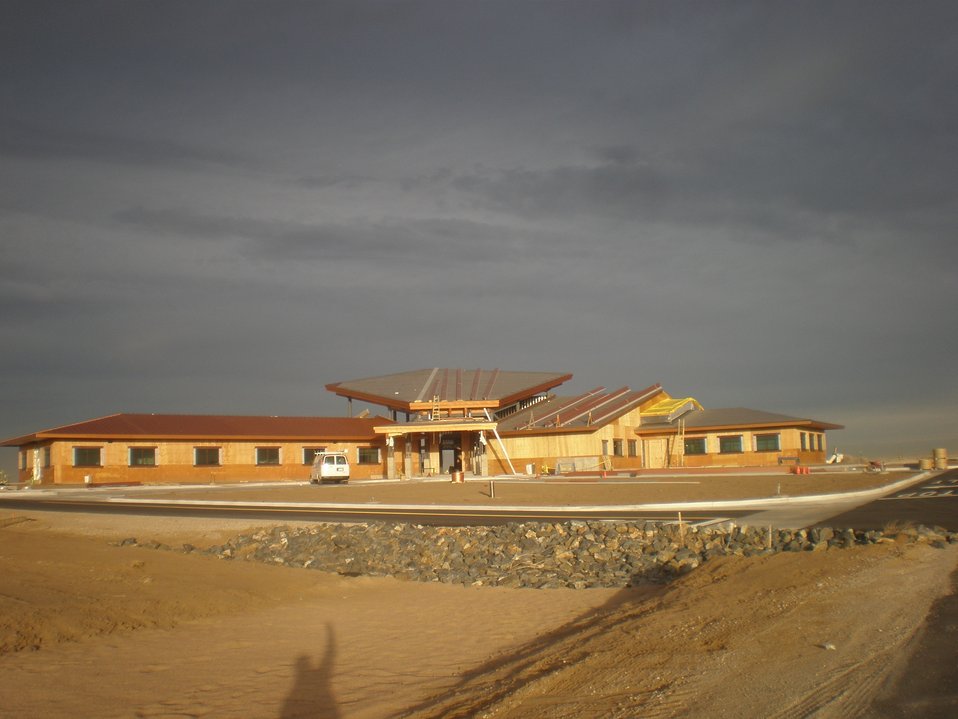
Rocky Mountain Arsenal Visitor Center

The Rocky Mountain Arsenal Visitor Center began construction thanks to American Recovery and Reinvestment dollars in 2010. Construction completion and grand opening of the new facility is scheduled for summer of 2011.